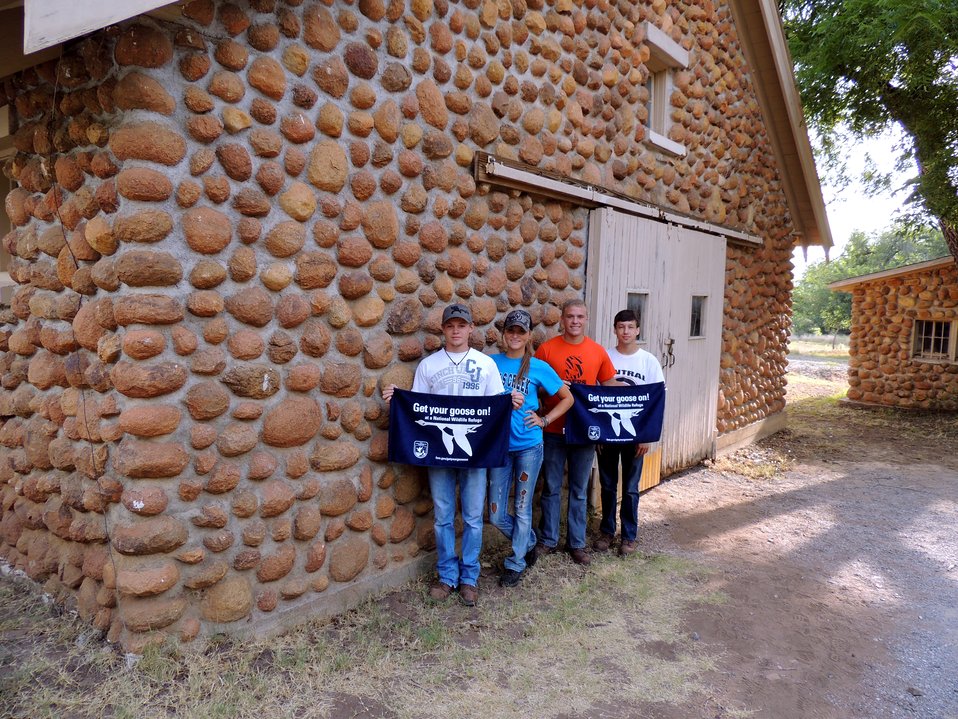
Get Your Goose On!

Wichita Mountains National Wildlife Refuge in Oklahoma.